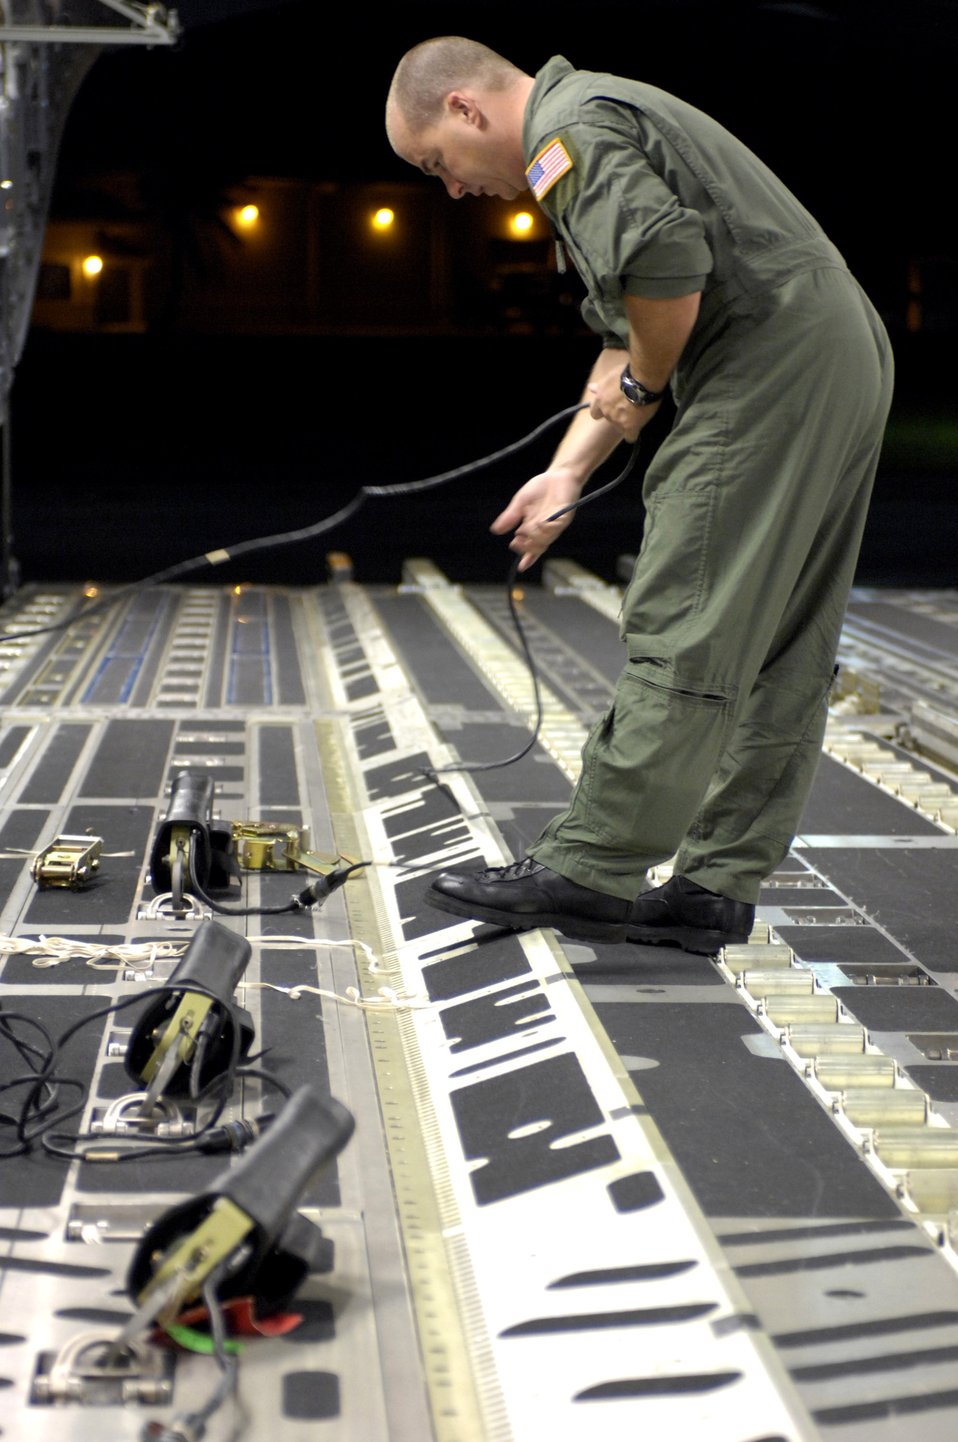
Andersen airdrop

Staff Sgt. Allen Culbreth connects gate release mechanisms on a C-17 Globemaster III for an upcoming airdrop Dec. 14 at Andersen Air Force Base, Guam. The C-17 from Hickam Air Force Base, Hawaii, is conducting airdrop training at Andersen AFB. Sergeant Allen is a loadmaster with the 535th Airlift Squadron.